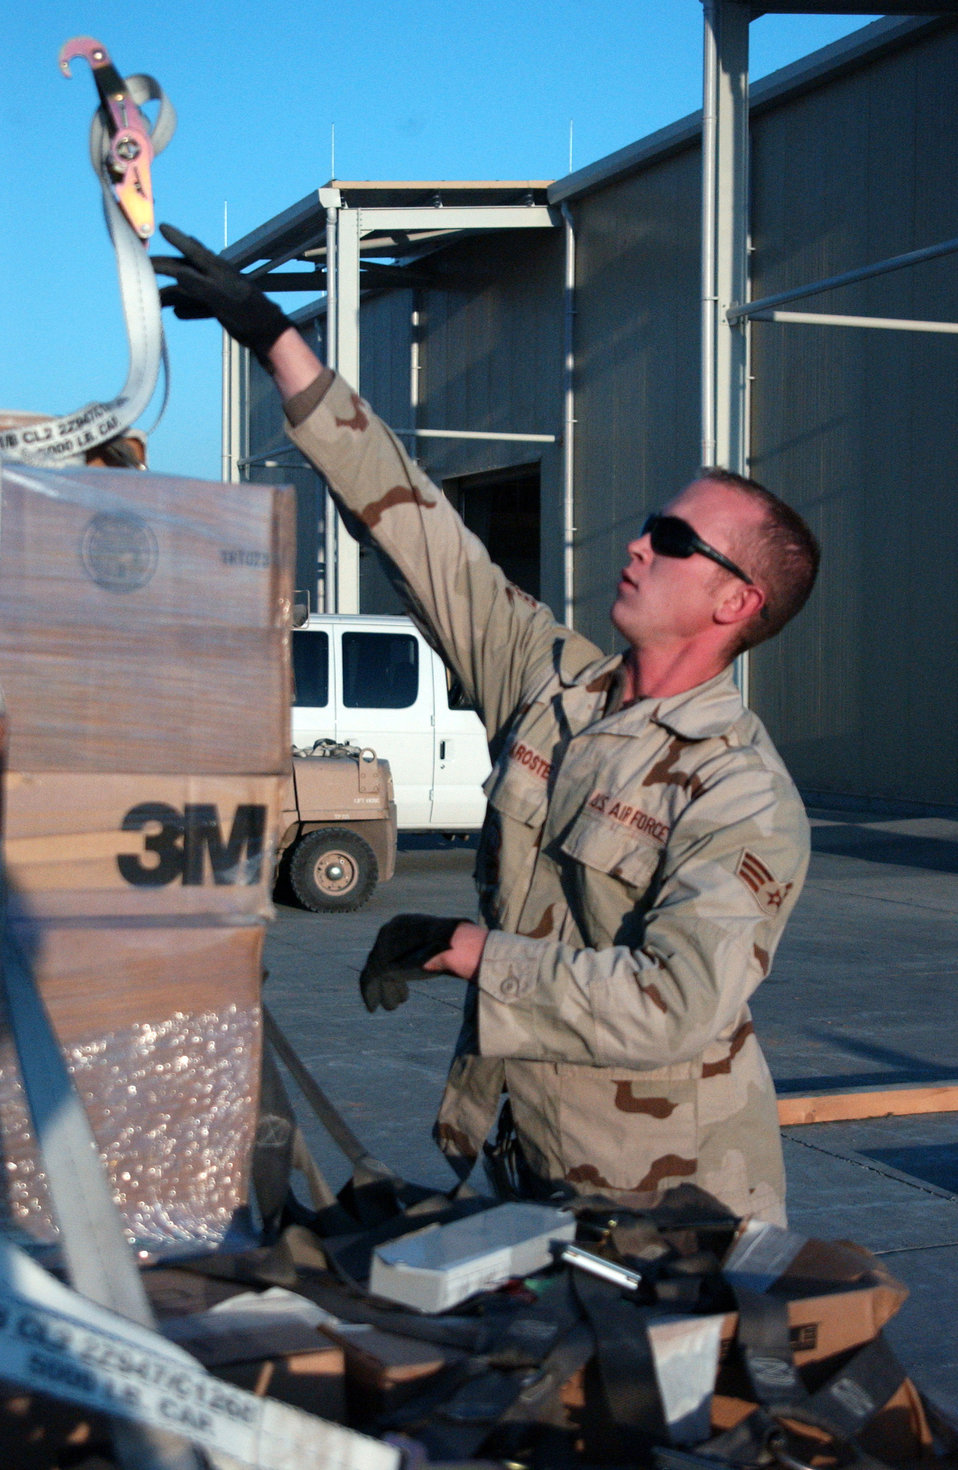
Port Dawgs

Senior Airman Travis Maroste breaks down a pallet Nov. 24 at the air terminal at Balad Air Base, Iraq. Airman Maroste is an air transportation cargo processor, or